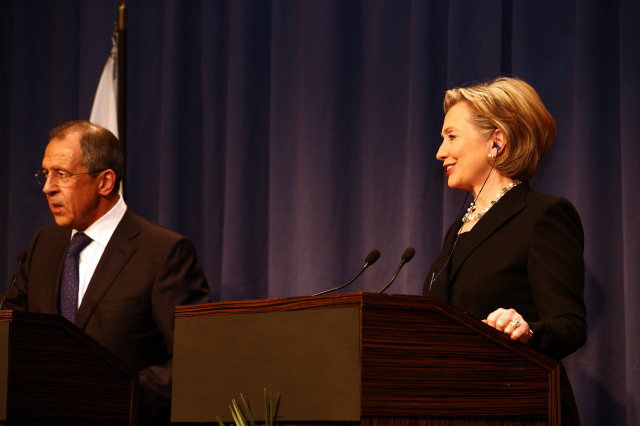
Press Conference With Russian Foreign Minister

Press conference after dinner meeting between U.S. Secretary of State Hillary Rodham Clinton and Russian Foreign Minister Sergey Lavrov in Geneva, Switzerland March 6, 2009.